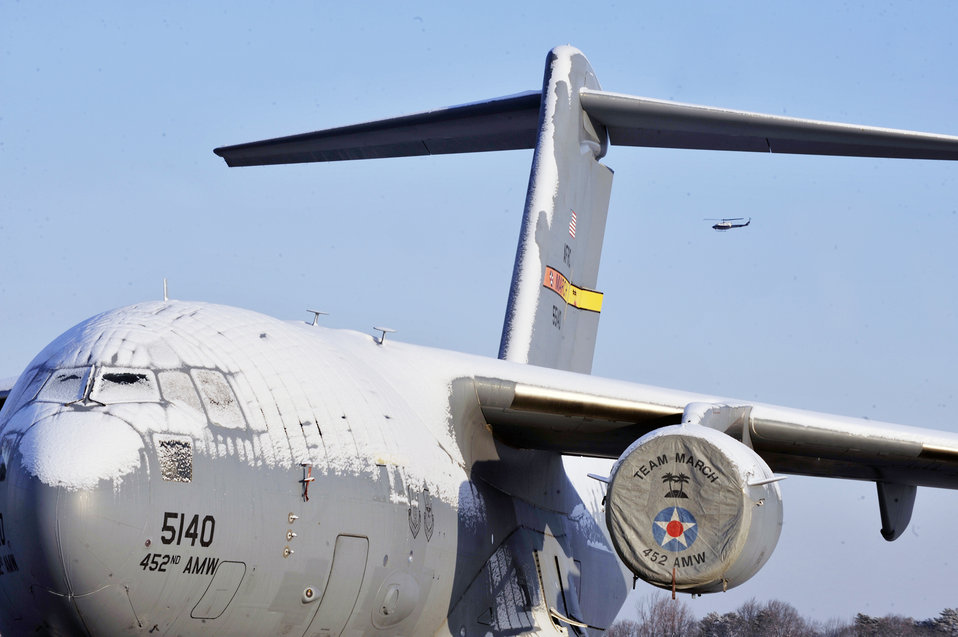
Getting the cold shoulder

After an overnight snow storm hit the National Capitol Region, a C-17 Globemaster III from the 452nd Air Mobility Wing at March Air Reserve Base, Calif., sits on the flightline at Andrews Air Force Base, Md., Jan. 8, 2010. Airmen spent most of the morning de-icing aircraft and clearing the flightline.